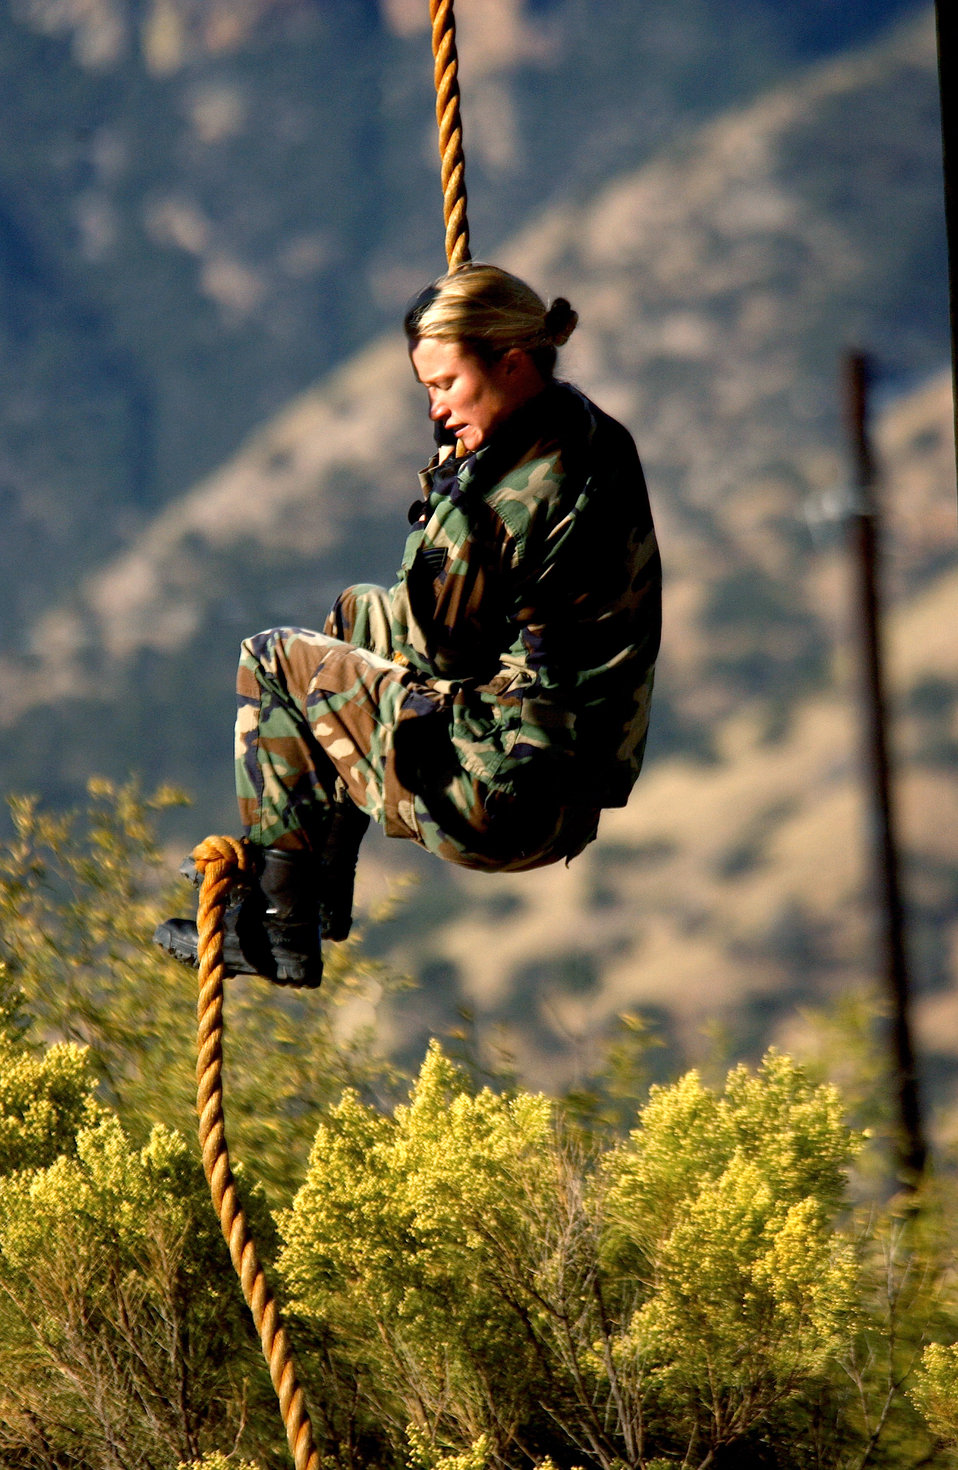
Down you go

FORT HUACHUCA, Ariz. -- Staff Sergeant Sally McCabe climbs down the back rope on the first training obstacle named